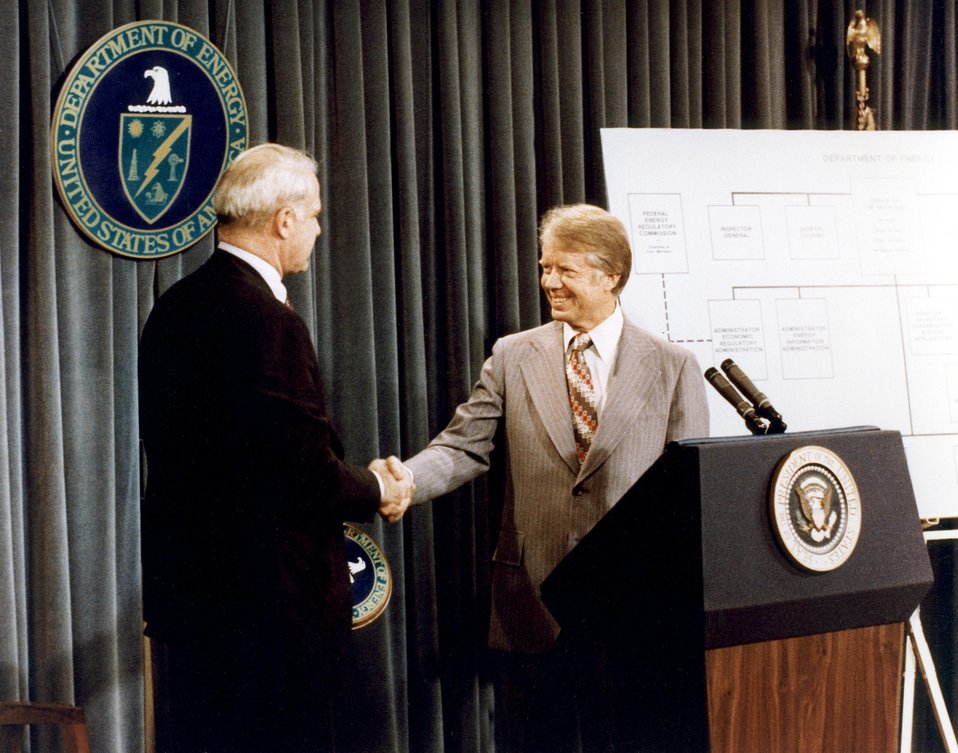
President James Earl Carter and Secretary Schlesinger.